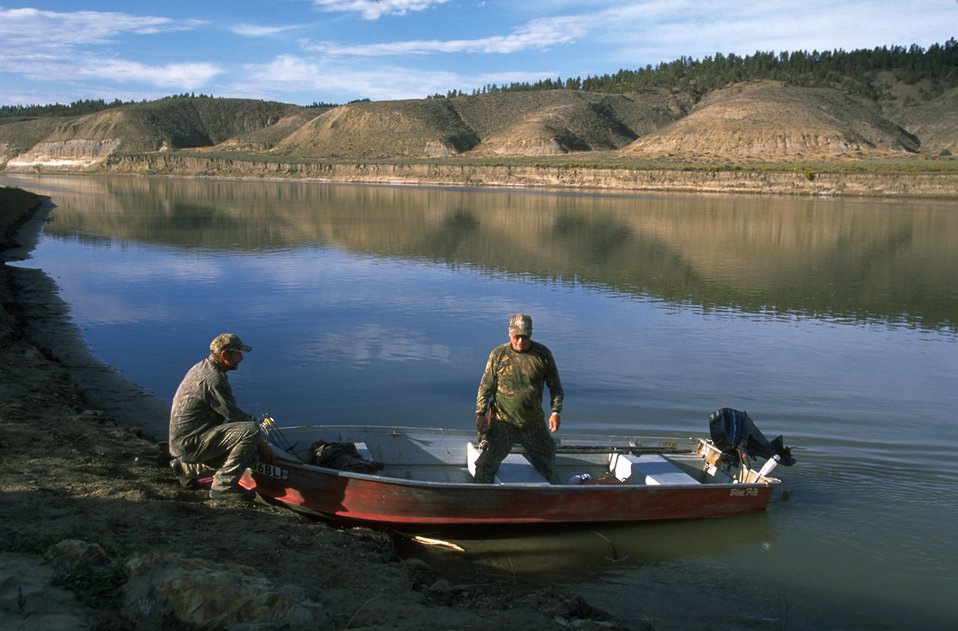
Motorboat at Kipp Recreation Area